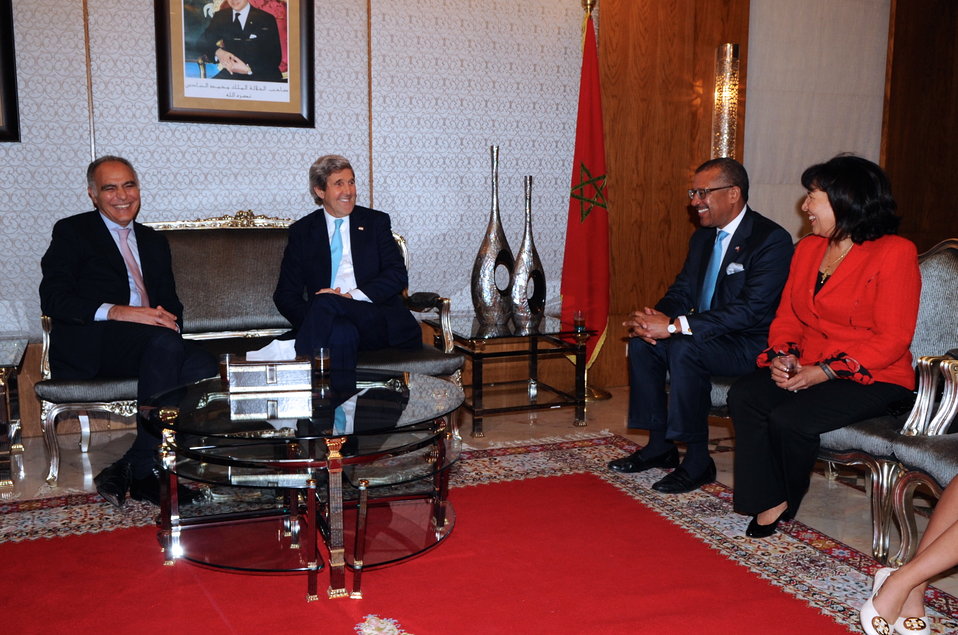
Moroccan Foreign Minister Mezouar Welcomes Secretary Kerry With Tea Ceremony

Moroccan Foreign Minister Salaheddine Mezouar welcomes U.S. Secretary of State John Kerry, U.S. Ambassador to Morocco Dwight Bush and his wife, Antoinette, with a tea ceremony in Rabat, Morocco on April 3, 2014, before a Strategic Dialogue between their two countries.